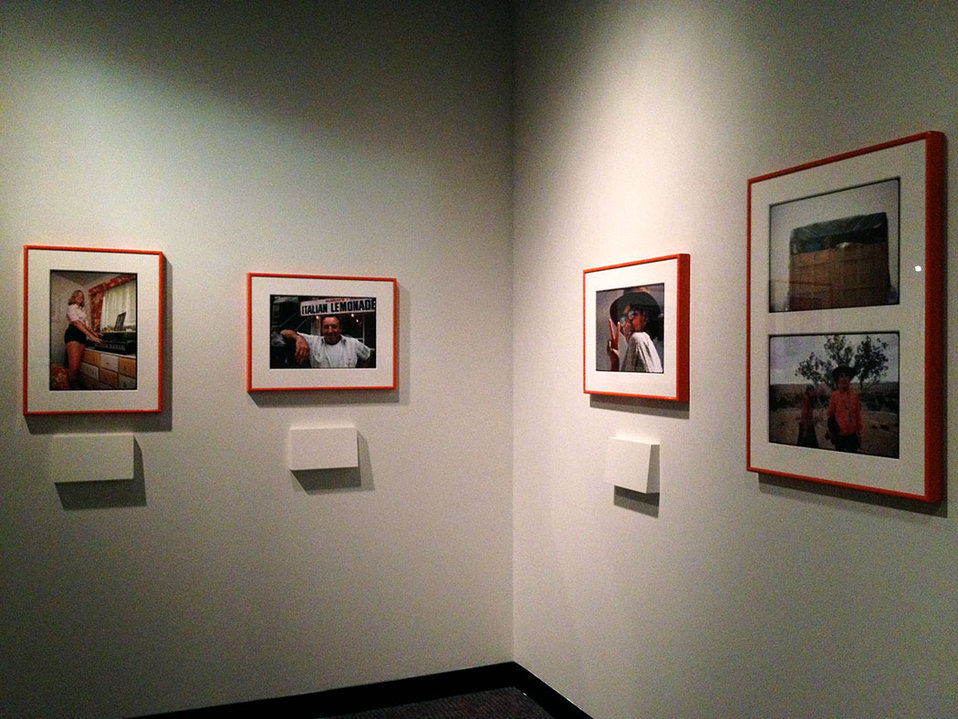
Documerica Photo Installtion

More exhibition photos installed in the O'Brien Gallery for the 'Searching for the Seventies' exhibit.